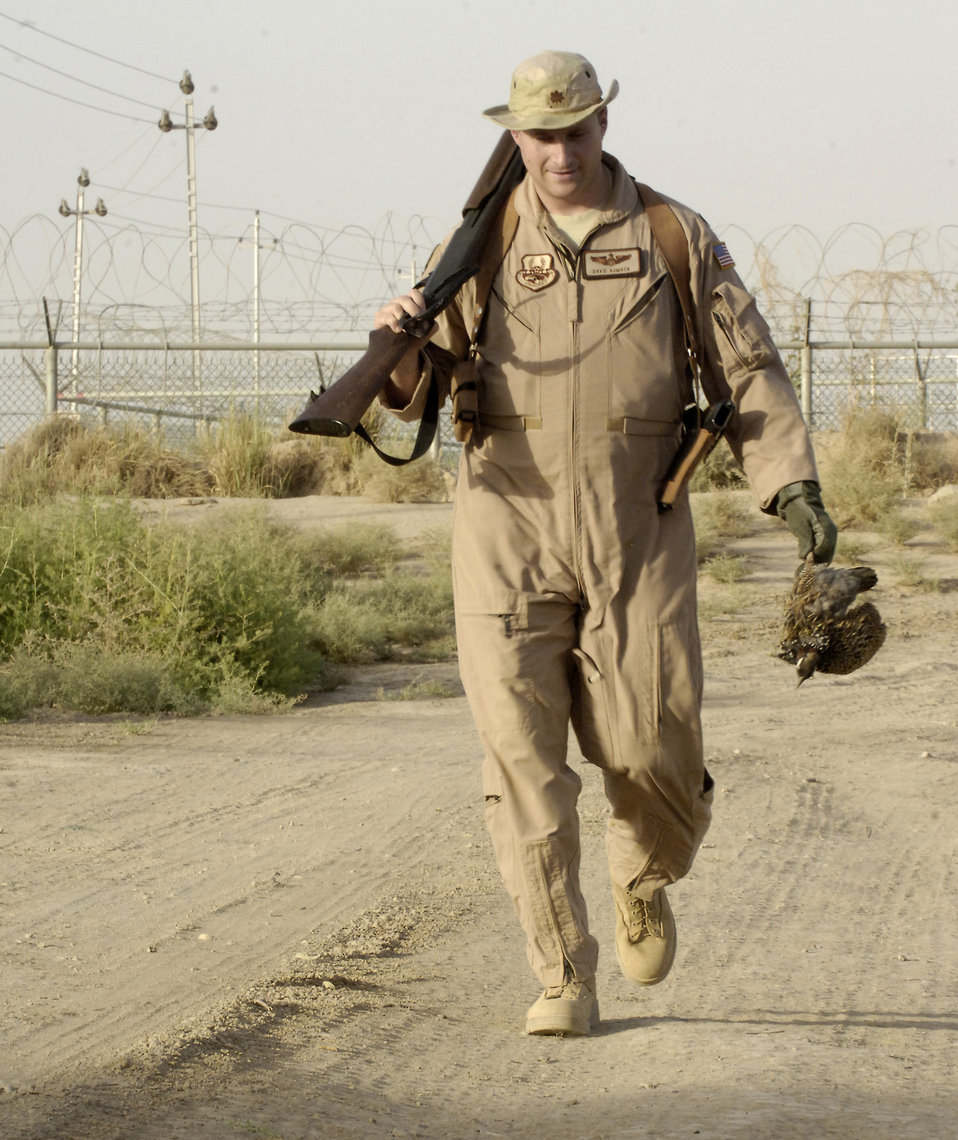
BASH program

Maj. David Aumack brings in a quail he killed June 3, 2011, as part of the Bird/Wildlife Aircraft Strike Hazard program at Baghdad International Airport. The BASH program is designed to reduce wildlife hazards by keeping birds and other animals away from runways and planes. Major Aumack is a flight safety officer assigned to the 321st Air Expeditionary Wing.